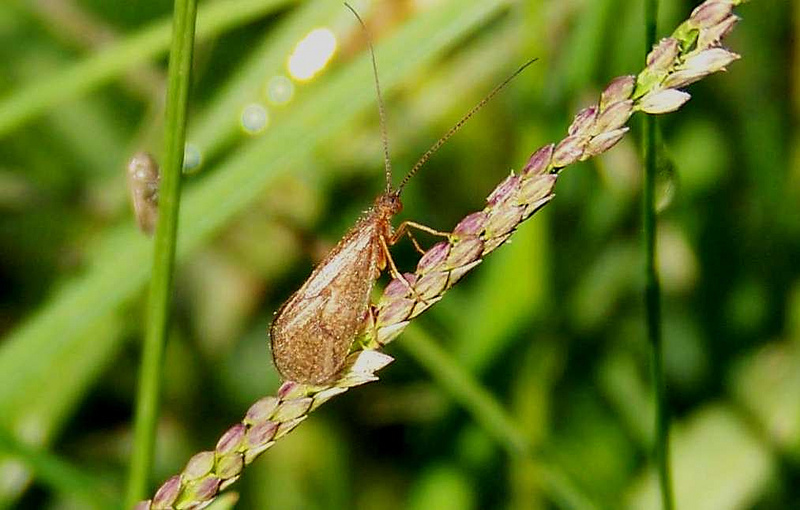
Platte River Caddisfly

A close-up shot of the Platte River caddisfly.

Location: County Road near Chambers, Nebraska

Credit: Jeanine Lackey / USFWS

Photo Contest Entry #46